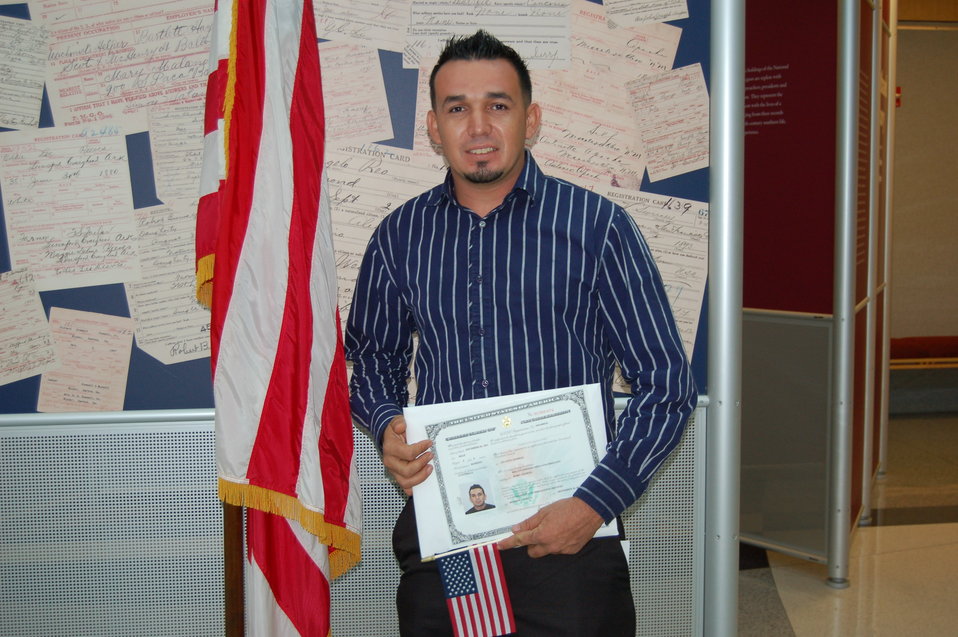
New Citizens